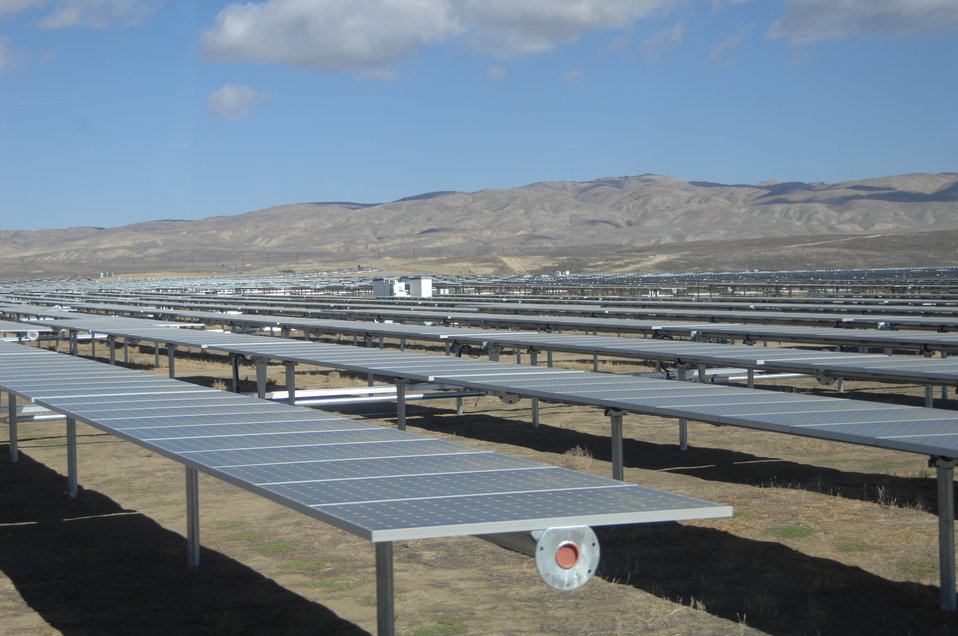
Solar Panels at California Valley Solar Ranch 1